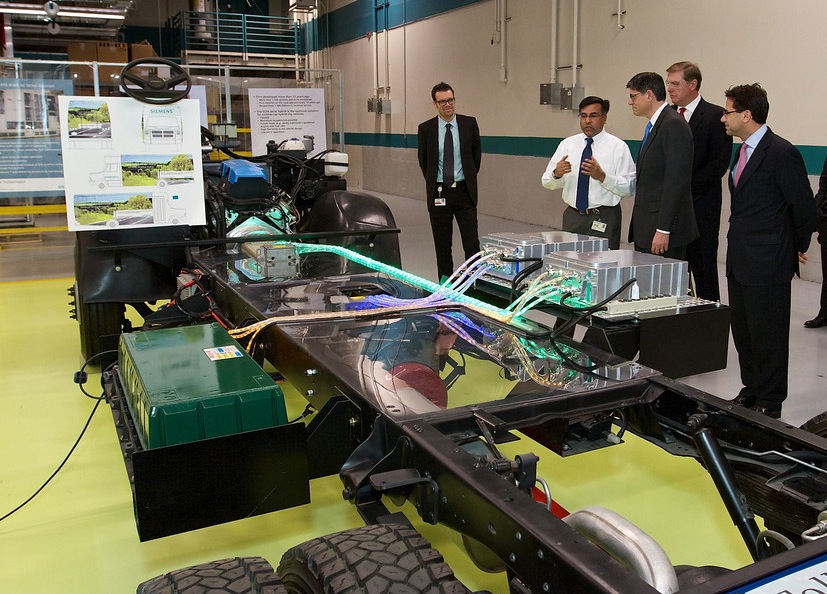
Secretary Lew tours Siemens’ manufacturing plant

Highlighting the importance of investments in manufacturing, innovation and job creation in the United States, Treasury Secretary Lew toured a Siemens’ manufacturing plant outside Atlanta, Georgia. He was accompanied by Eric Spiegel, President and CEO Siemens Corporation, and Helmuth Ludwig, CEO Siemens Industry Sector North America.